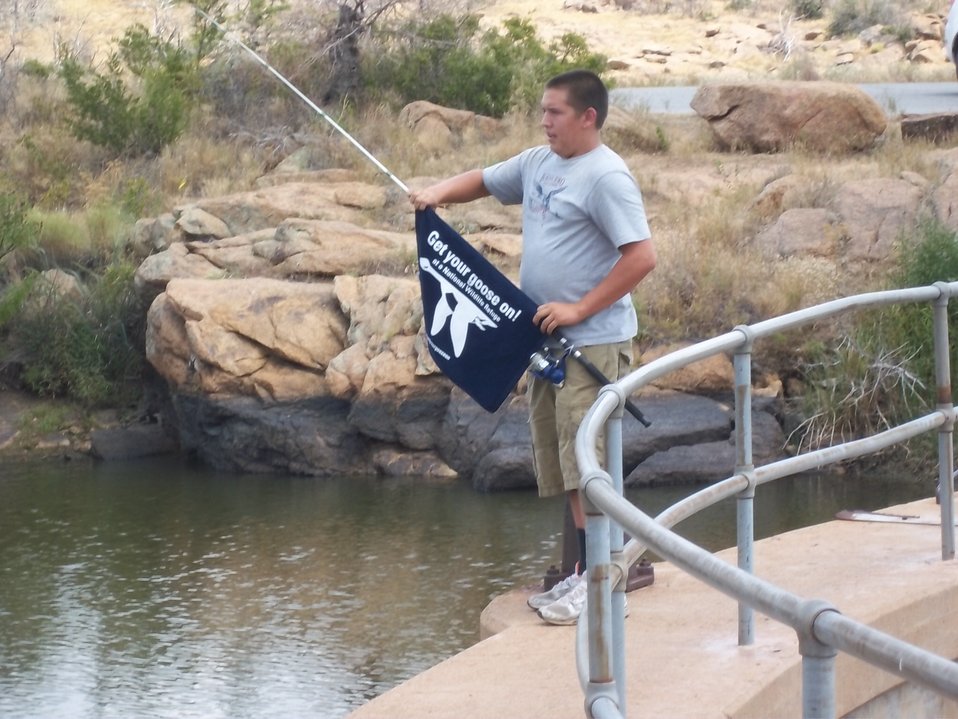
Get Your Goose On!

Wichita Mountains National Wildlife Refuge in Oklahoma.